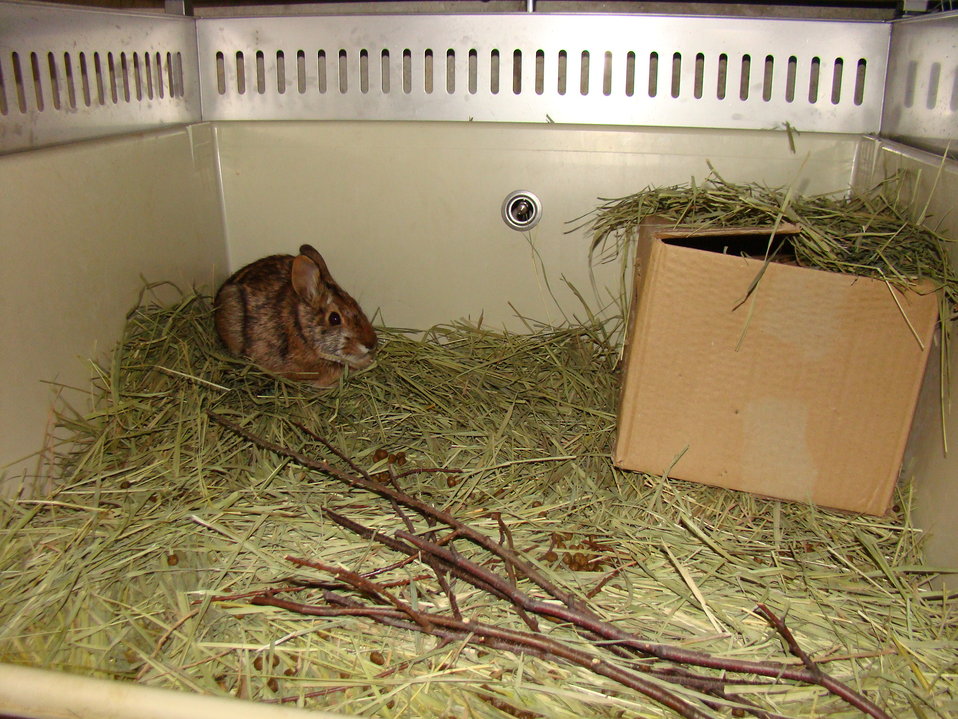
New England cottontail at Roger Williams Zoo, R.I.